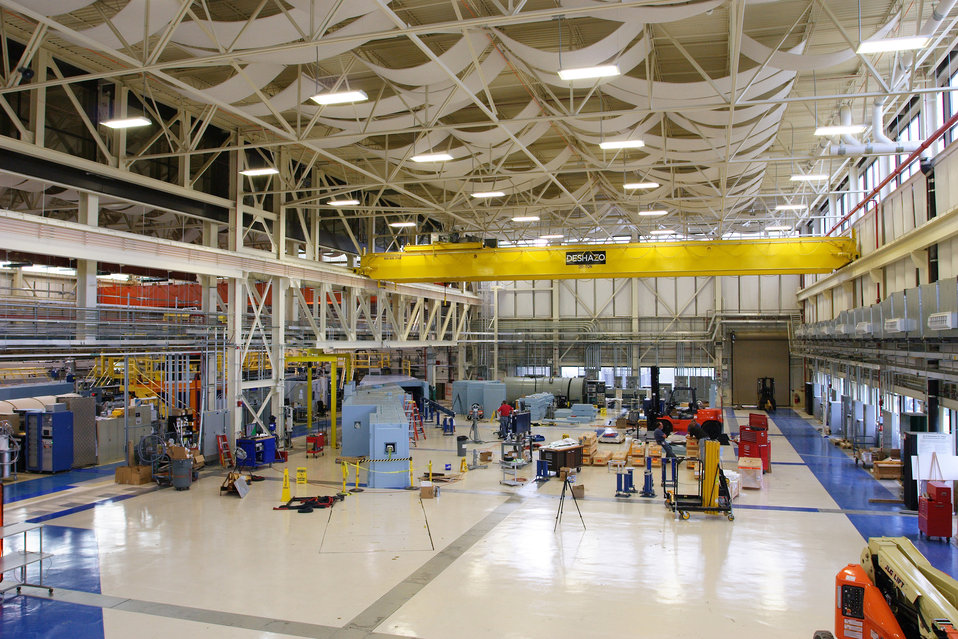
NCNR Guide Hall

This photo of the NIST Center for Neutron Research's guide hall expansion area shows two new beamlines enclosed in protective shielding (blue structures directly under left end of yellow crane) as well as two others whose shielding is not yet completed (to the right of the enclosed beamlines). A fifth beamline, not visible, is under construction. Many new instruments will occupy the expansion's remaining area, allowing 500 more researchers per year to conduct research.